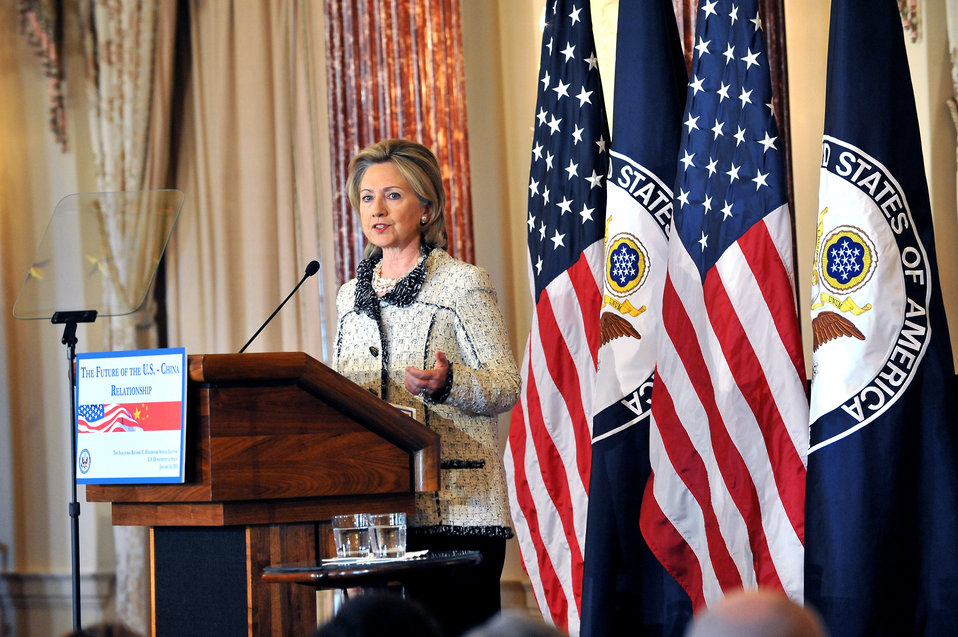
Secretary Clinton Delivers Remarks for the Inaugural Richard C. Holbrooke Lecture

U.S. Secretary of State Hillary Rodham Clinton delivers remarks for the Inaugural Richard C. Holbrooke Lecture: Broad Vision of U.S.- China Relations in the 21st Century, in the Benjamin Franklin Room in the U.S. Department of State in Washington, D.C., on January 14, 2011.